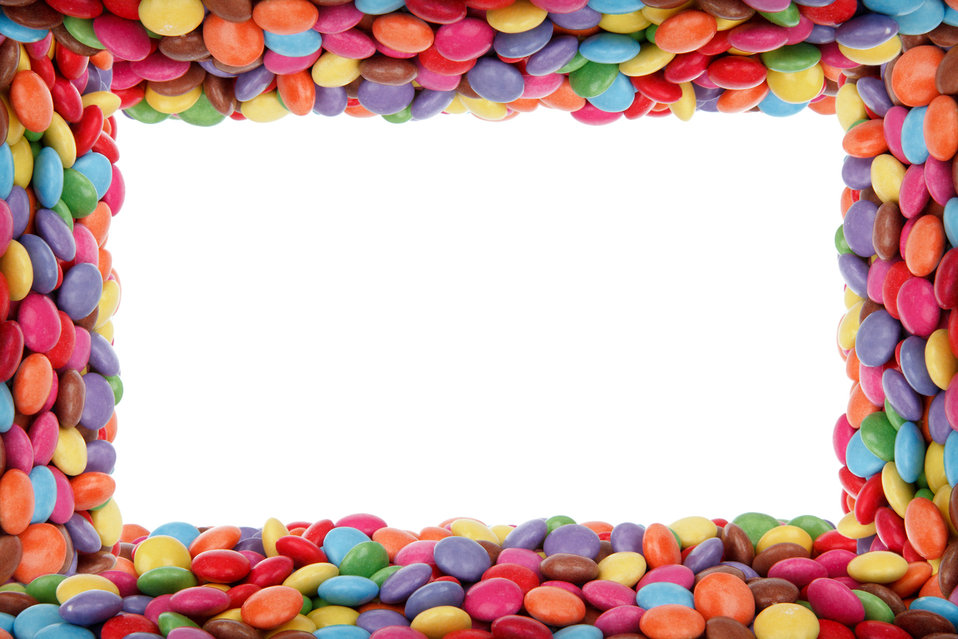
Colorful candy frame

Colorful chocolate buttons frame.